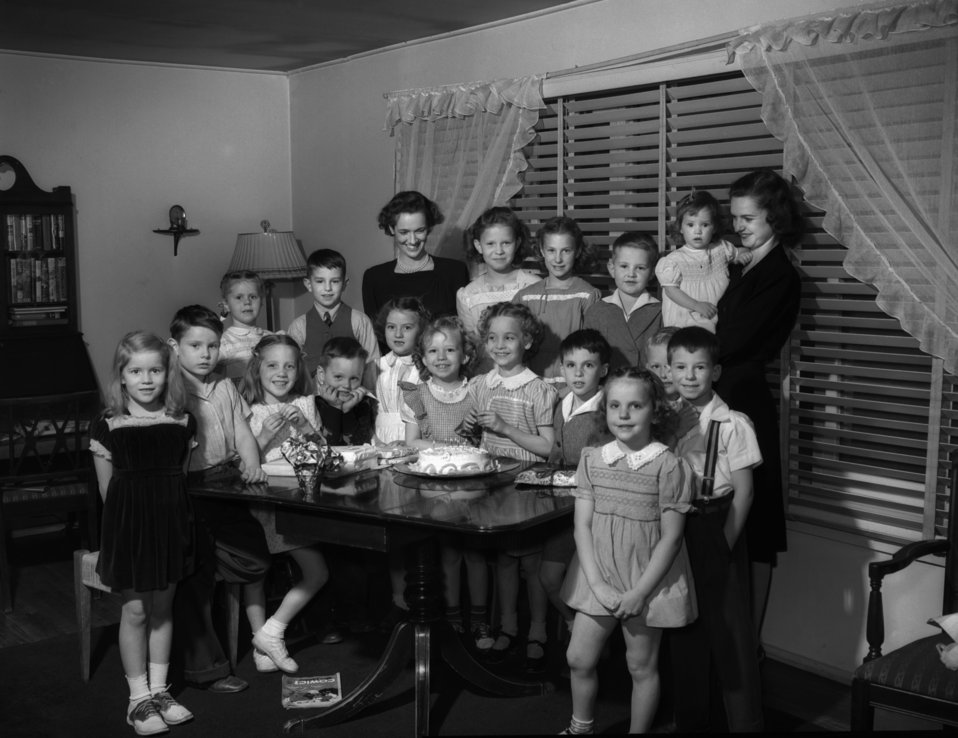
Maj. H. Flowers Birthday Party Oak Ridge

3329-2 DOE photo Ed Westcott 3-5-1947 Oak Ridge Tennessee